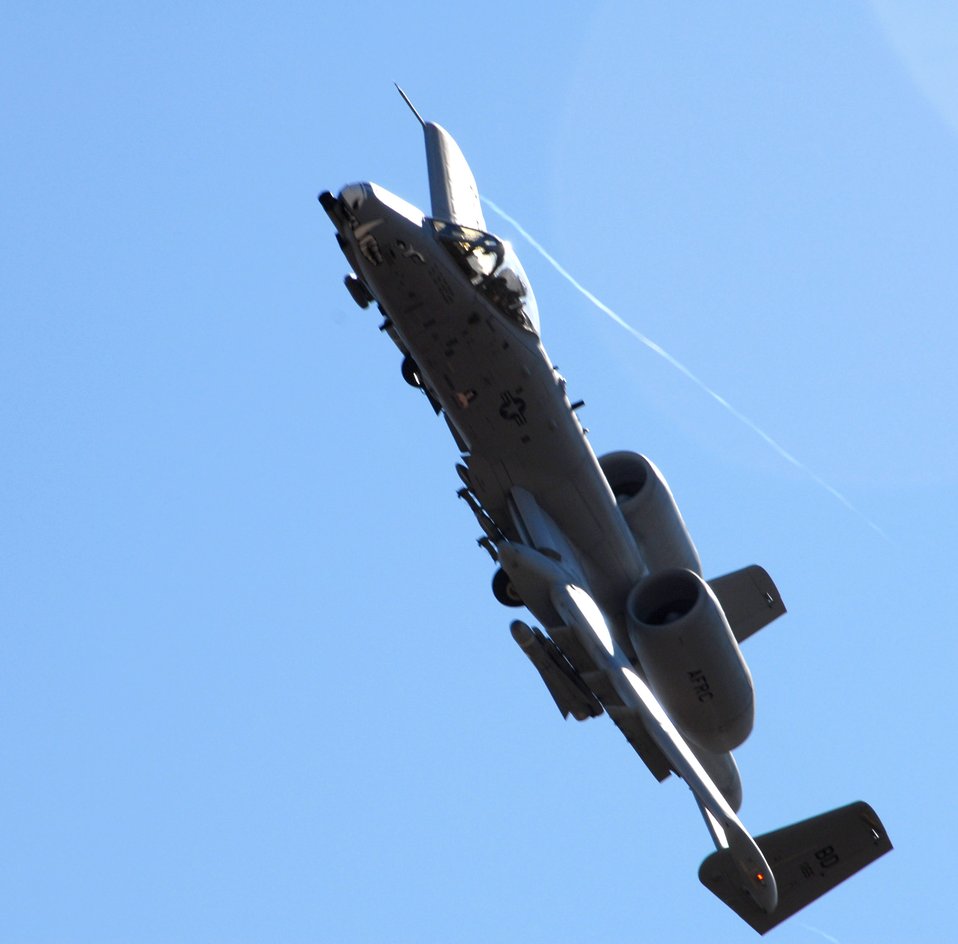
Hawgsmoke 2008

An A-10 Thunderbolt II from the Air Force Reserve Command's 917th Wing at Barksdale Air Force Base, La., turns to engage a target Oct. 16 at the Smoky Hill Range near Salina, Kan. Fourteen A-10 squadrons from across the Air Force are competing in Hawgsmoke 2008 Oct. 14 to 18. Hawgsmoke is a biennial A-10 bombing and aerial gunnery competition, which was hosted this year by the Air Force Reserve Command's 442nd Fighter Wing based at Whiteman Air Force Base, Mo.